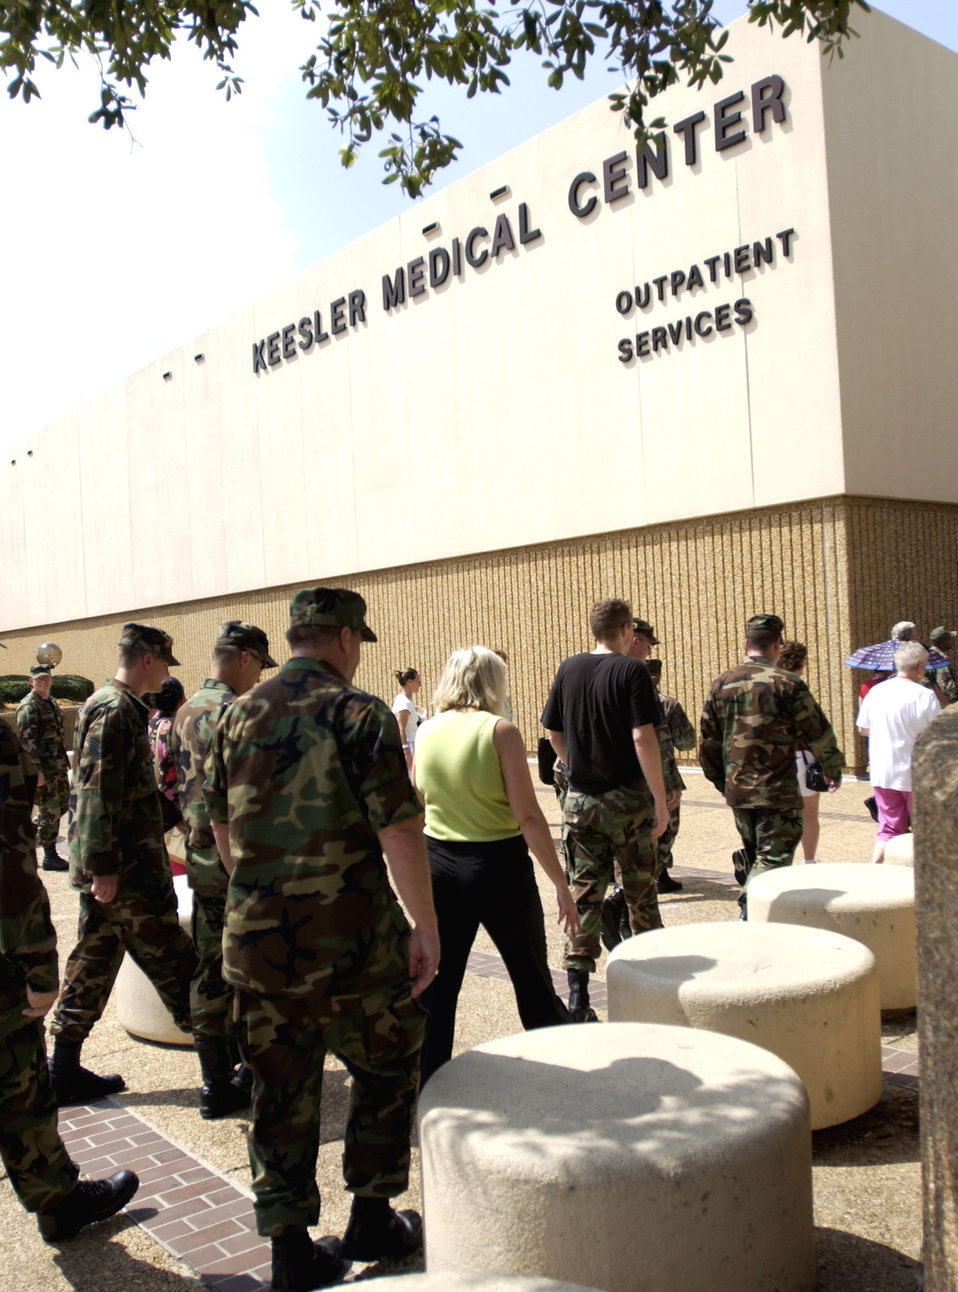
Keesler hospital takes big step forward

The Keesler Air Force Base, Miss., medical center re-opened Aug. 29, one year after Hurricane Katrina devastated the facility.